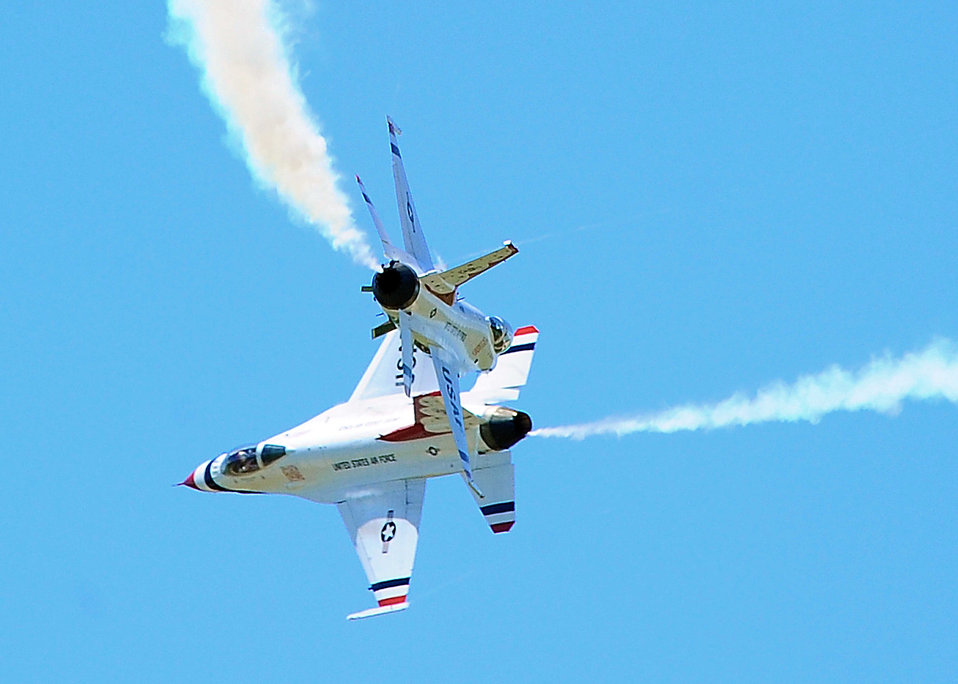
Precise timing

U.S. Air Force Thunderbirds lead solo, Major Rick Goodman, and Captain Aaron Jelinek, the opposing solo, perform the crossover break May 1, 2010, during the Big Country Air Fest at Dyess Air Force Base, Texas. The air fest featured aircraft performances as well as static displays.